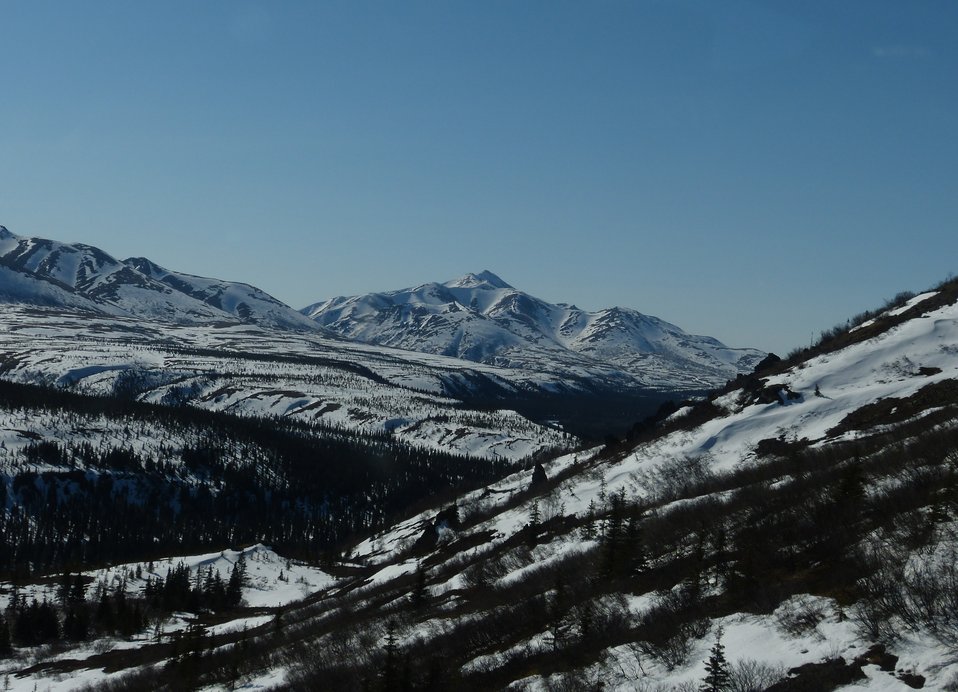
Kilbuck Mountains May2013 KSowl

Cliff-nesting raptor survey, Kilbuck Mountains, Yukon Delta National Wildlife Refuge

Photo credit: Kristine Sowl,
USFWS, YDNWR